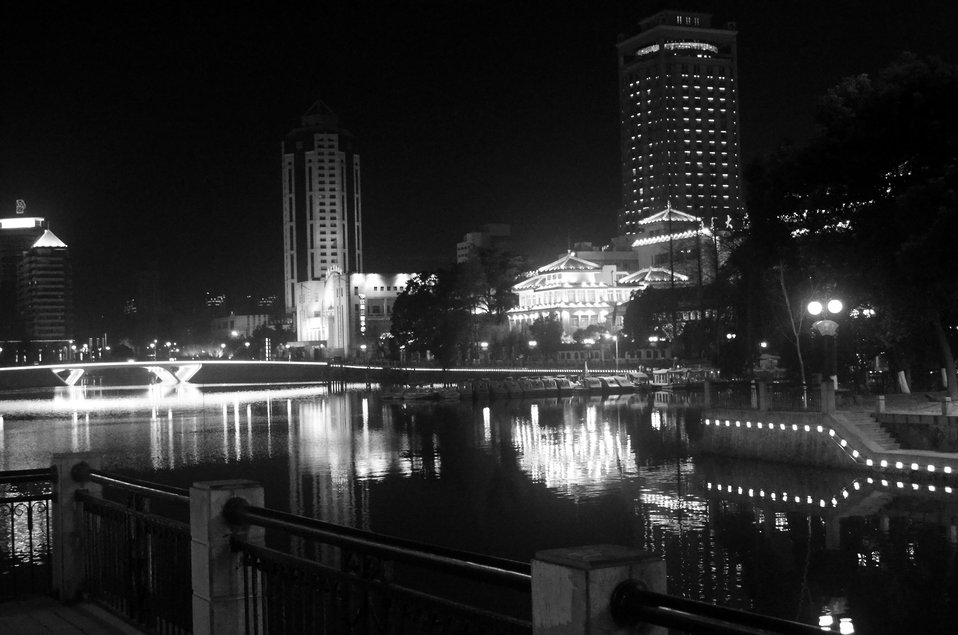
Nightscape nantong

Night scene on the nantong hao river.